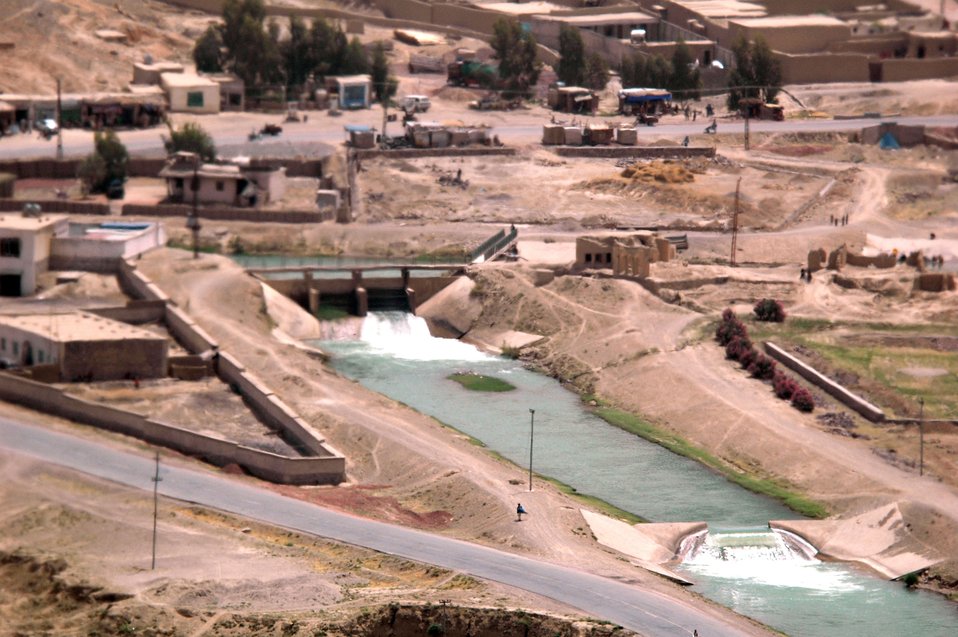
CODEL Berman